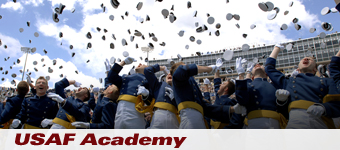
New lieutenants at the Academy

U. S. Air Force Academy graduates fling their caps into the air.